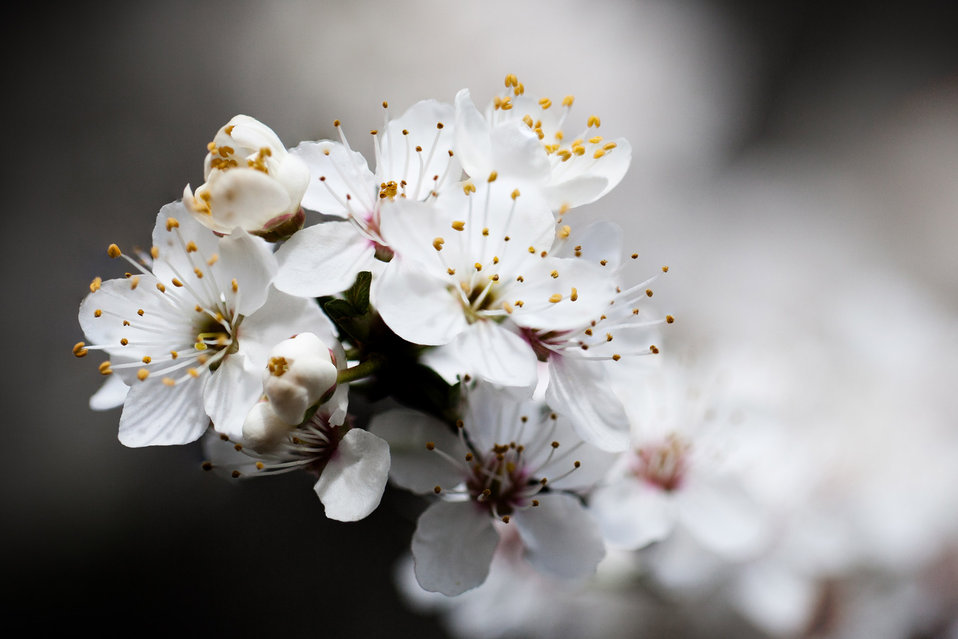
Blossoming cherry tree

Detail of a blossoming cherry tree.